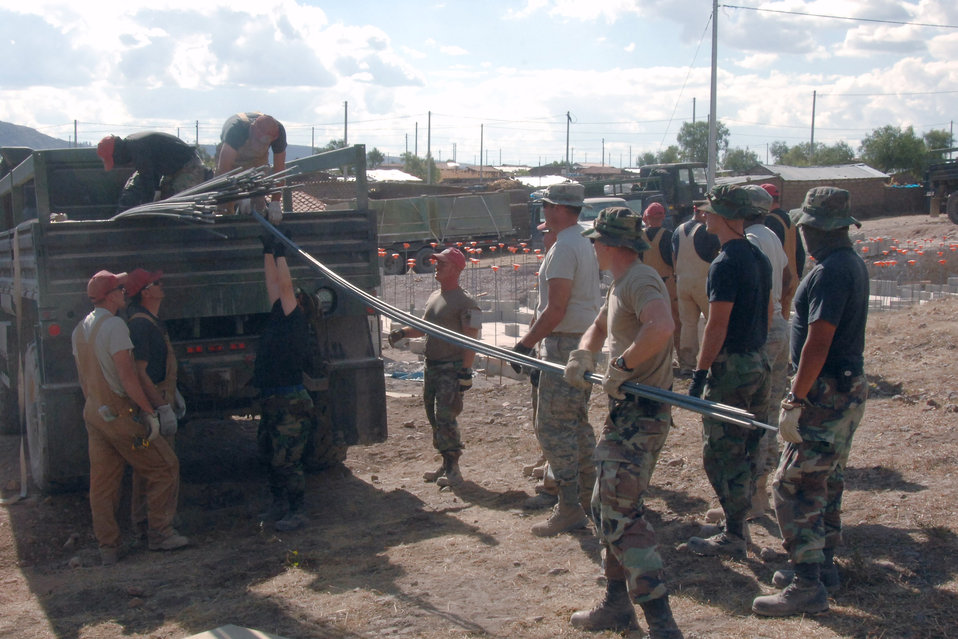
New Horizon Peru

Airmen assigned to Task Force New Horizon-Peru 2008 unload rebar to begin construction of a clinic in Yanama, Peru. The construction is in support of New Horizons Peru 2008, a humanitarian event that benefits thousands of Peruvians. Nearly 300 members came together to provide Peruvians with new schools, clinics and water wells.